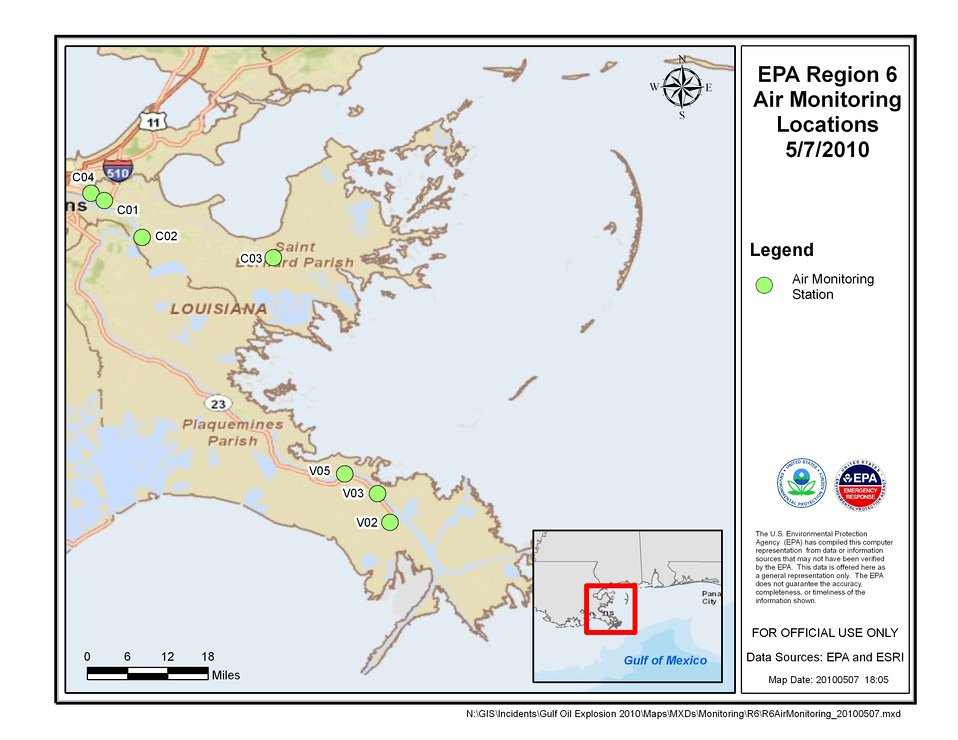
EPA Air Monitoring Locations May 7, 2010